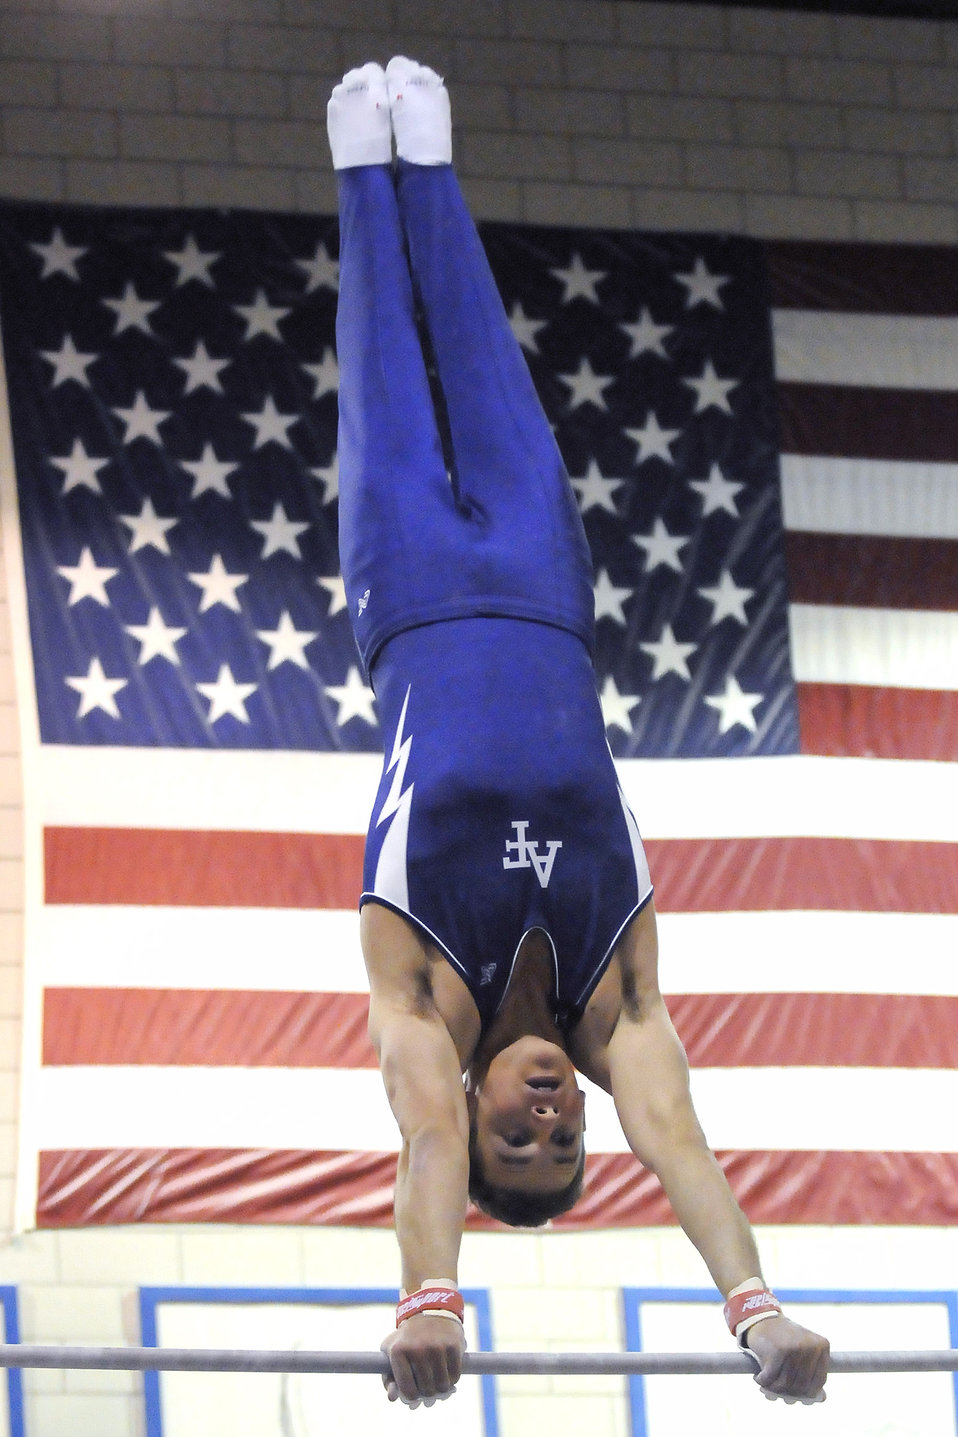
Airpower

U.S. Air Force Academy freshman Devin Menefee performs on the high bar during the annual Rocky Mountain Open Jan. 10 at the Academy in Colorado. The Falcons men's gymnastics team accounted for seven top-10 finishes as they placed third overall in the meet in front of a capacity crowd.